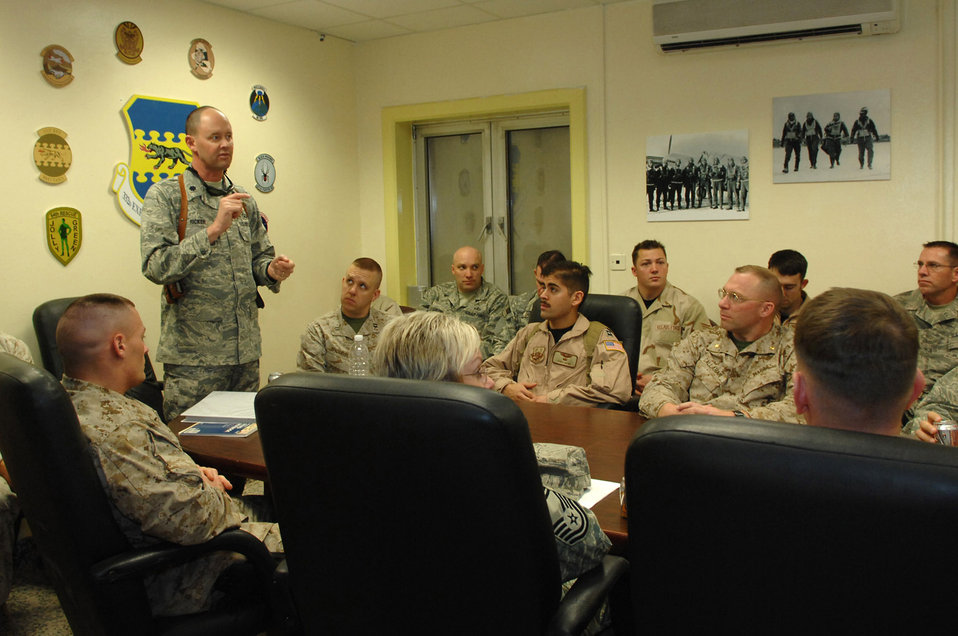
Airmen, Marines seek to integrate, synchronize in skies over Iraq

Lt. Col. Robert Ricker, discusses joint air traffic control and central Iraq airspace utilization issues with subject matter experts from the 3rd Marine Air Wing-Forward here, Feb. 10. Colonel Ricker is the 332nd Expeditionary Operations Support Squadron airfield operations flight commander.